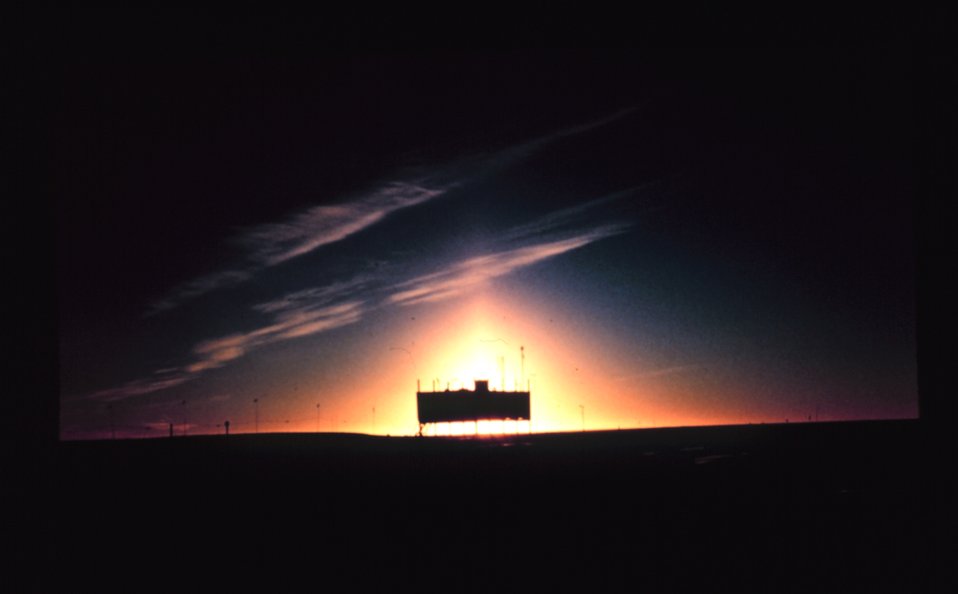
A bizarre effect of time-lapse photography makes Clean Air Facility appear to be illuminated by triangular shaft of reflected sunlight.